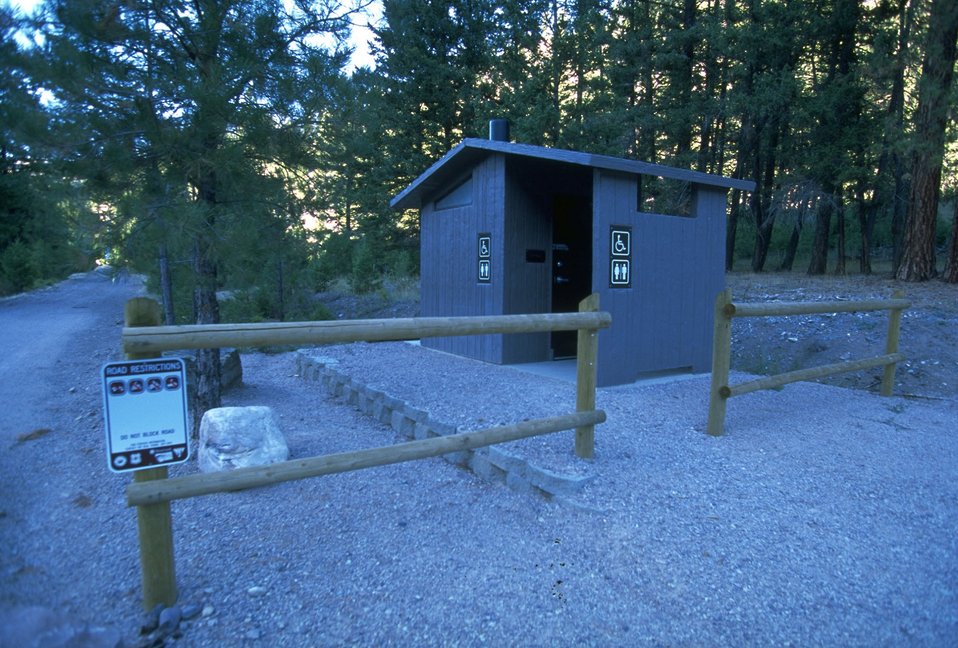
Blackfoot River-Whitaker Bridge outhouse